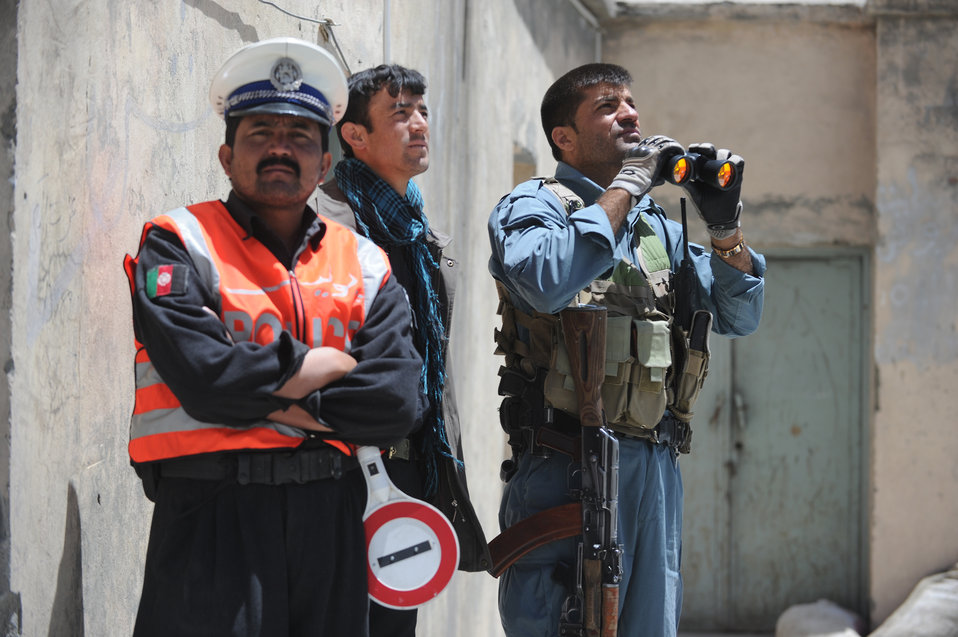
Security at the North entrance of the Salang Tunnel on the border of Parwan and Baghlan Provinces, Afghanistan, on Wednesday, June 15, 2011. (S.K.Vemmer/Department of State)